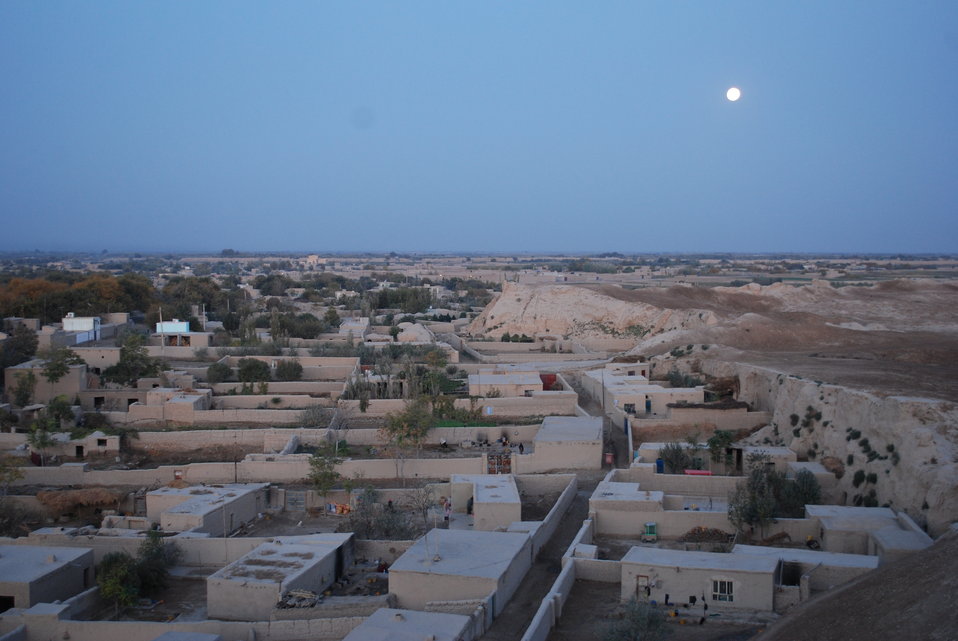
'On the Road' in Balkh Province